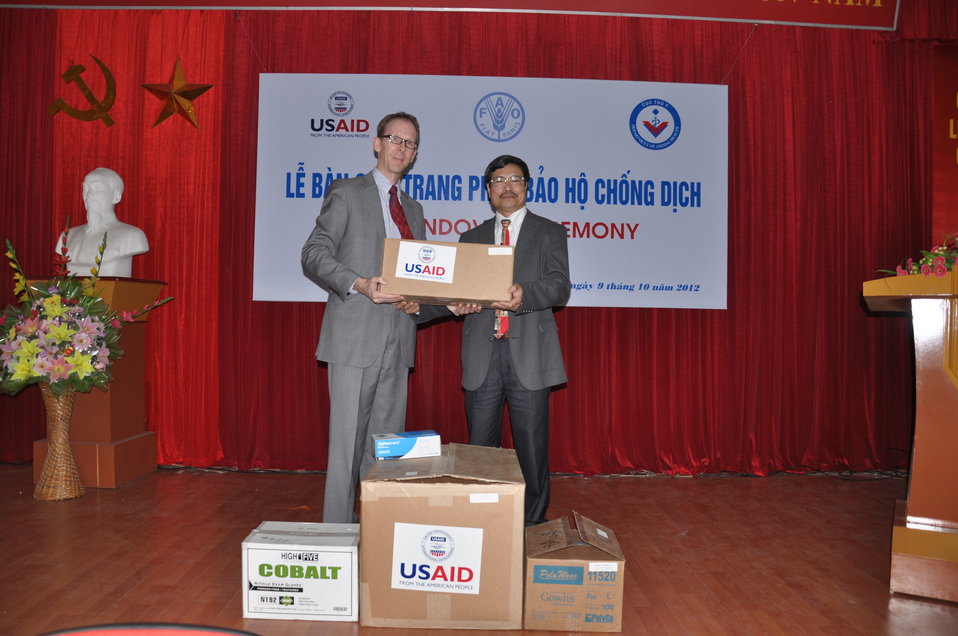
USAID Mission Director Joakim Parker, left, and Director General of Vietnam's Department of Animal Health, Dr. Pham Van Dong at the Protective Gear Handover Ceremony

Handover of personal protective equipment event in Hanoi.